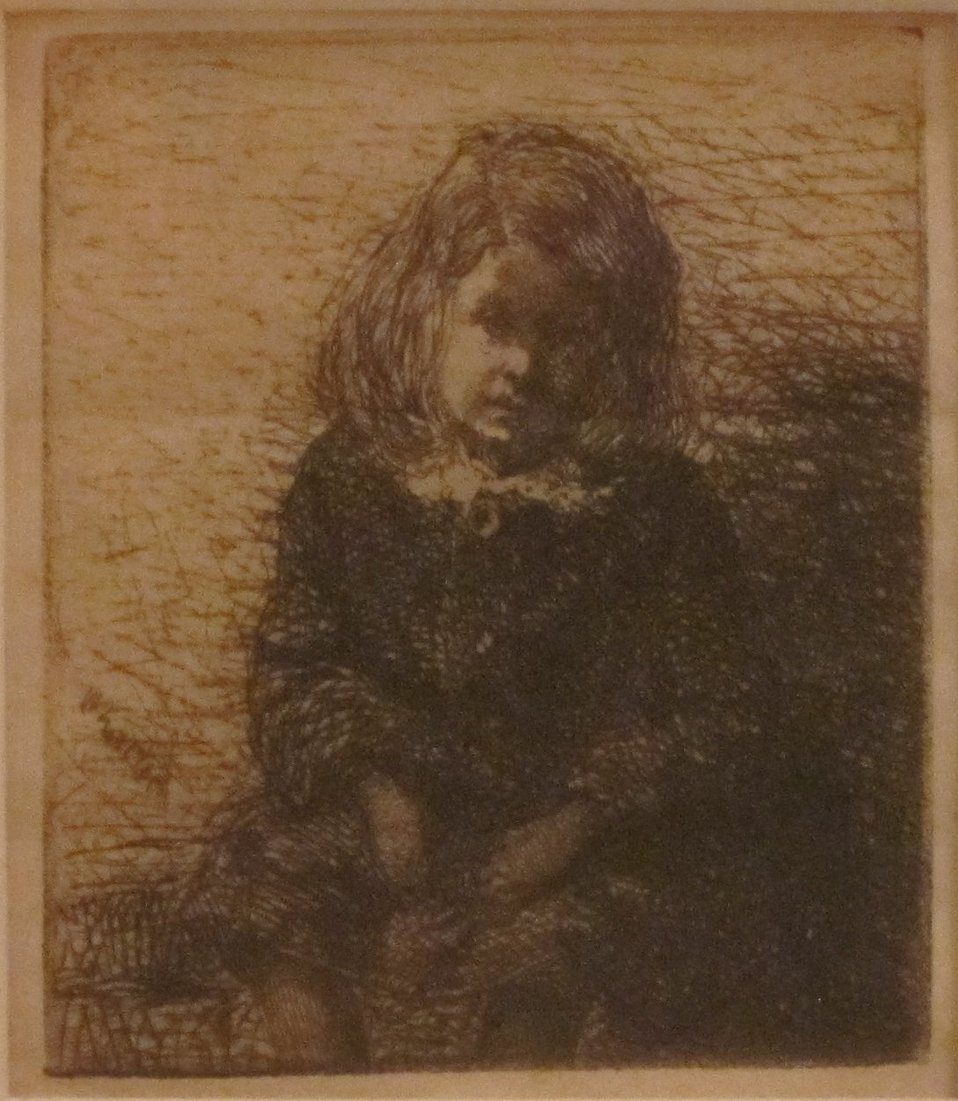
'Little Arthur' by James McNeill Whistler, 1858, etching, Honolulu Museum of Art